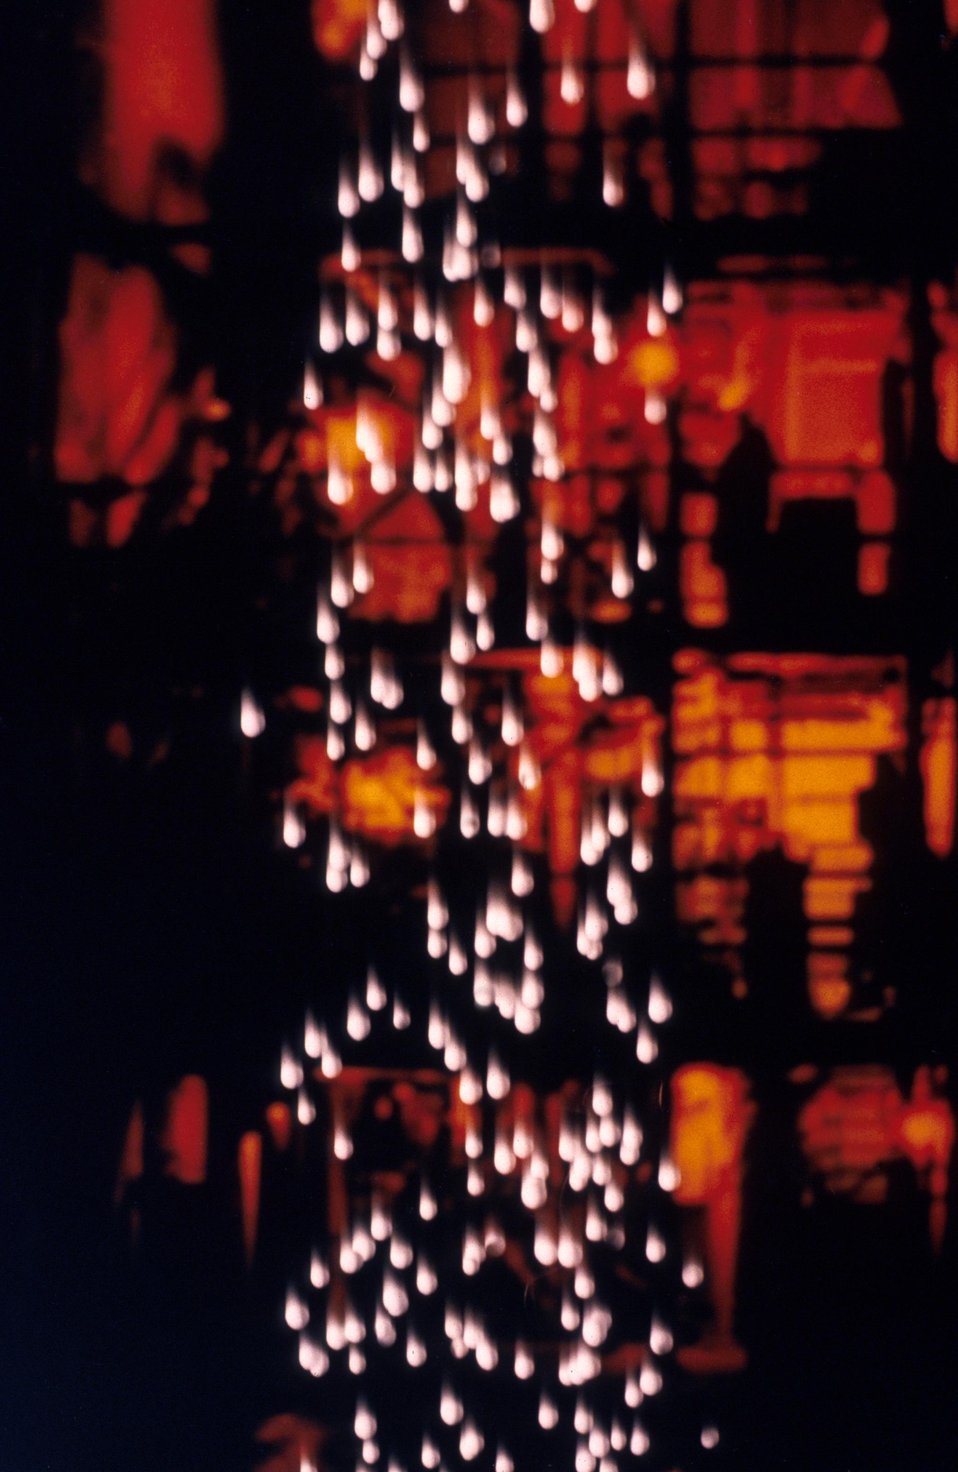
BACKGROUND SHOWS PLANT ADAPTED FOR MODIFIED HOT RECYCLED SOLID RETORTING PROCESS WITH CERAMIC SPHERES IN FOREGROUND.
LLNL'S MODIFIED HOT-RECYCLED-SOLID (HRS) RETORTING PROCESS IS BEING USED TO DECOMPOSE OR TREAT HARMFUL CHEMICALS AND COMPOUNDS. IN COLLABORATION WITH SANDIA, LLNL ADAPTED AN ON SITE PLANT TO DEMONSTRATE THE FEASIBILITY OF DECOMPOSING SODIUM NITRATE USING A CIRCULATING BED OF HOT CERAMIC SPHERES. RESEARCHERS ARE STUDYING THE FEASIBILITY OF THE MIXED WASTES STORED AT THE HANFORD, WA SITE. THIS MODIFIED HRS PROCESS HAS POTENTIAL FOR ADDRESSING MANY ASPECTS OF WASTE TREATMENT.